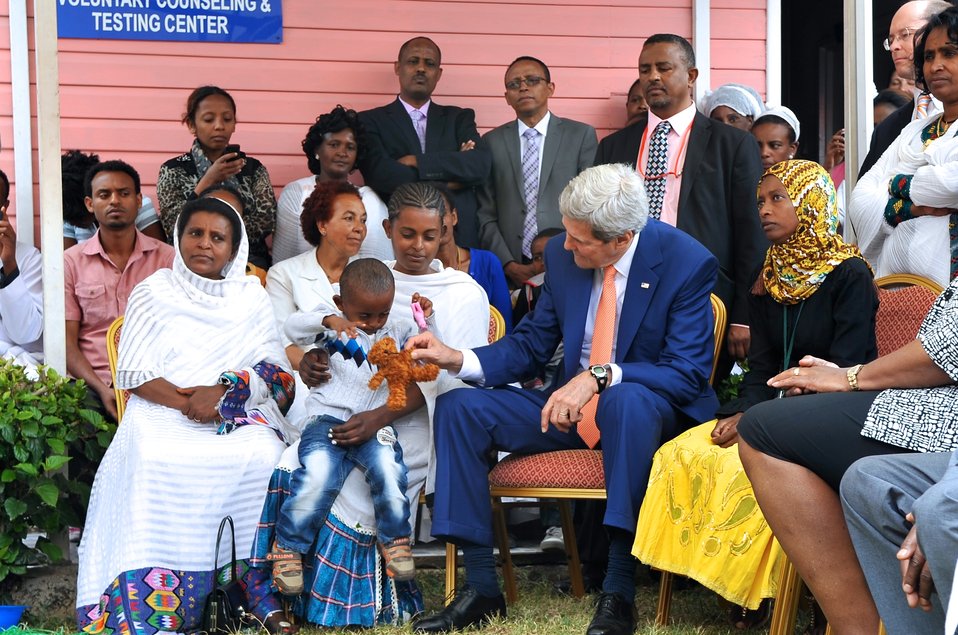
Secretary Kerry Plays With Little Boy at HIV Clinic in Ethiopia

U.S. Secretary of State John Kerry plays with a little boy whose family has received treatment at a PEPFAR-supported HIV clinic in Addis Ababa, Ethiopia, on May 1, 2014.